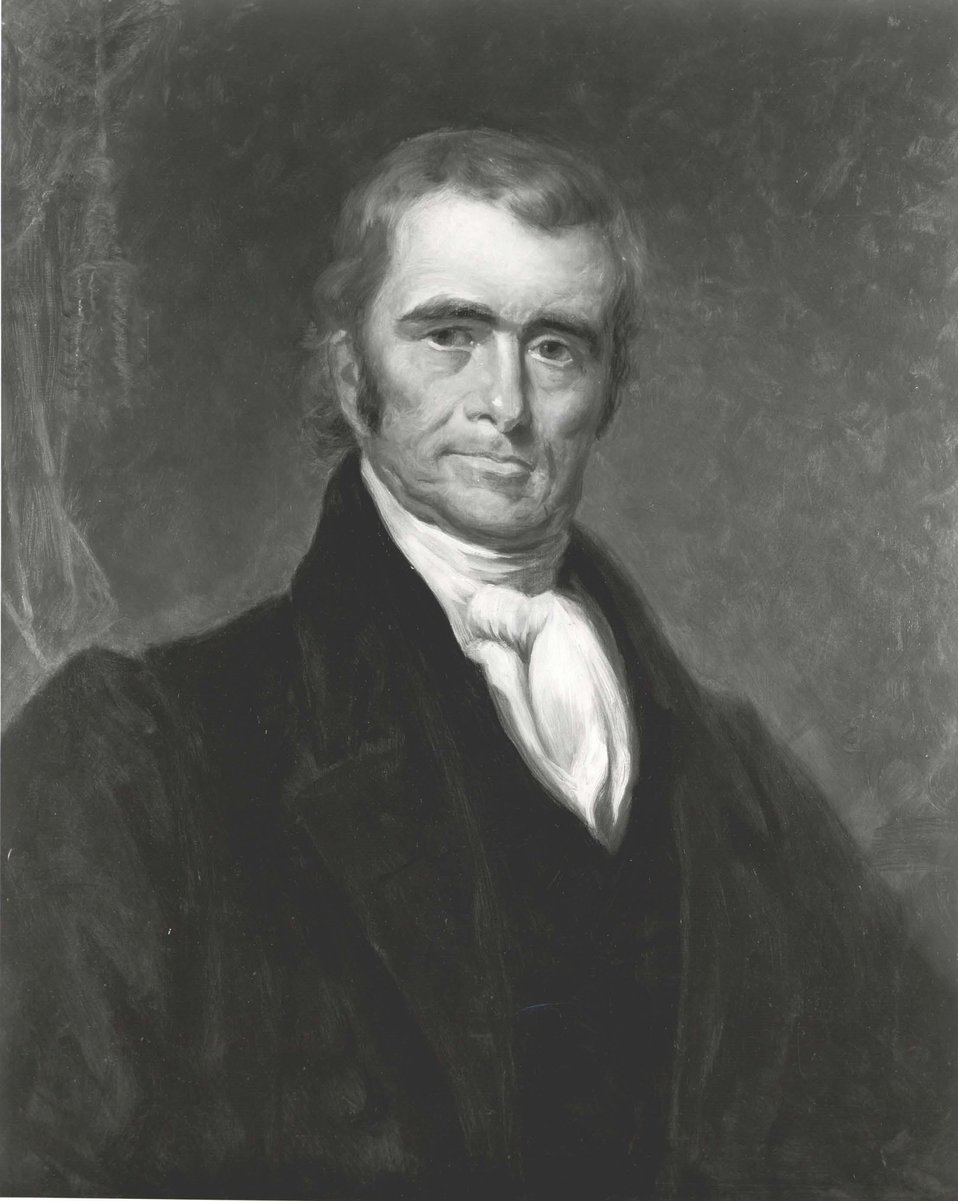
John Marshall, U.S. Secretary of State, June 6, 1800 to February 4, 1801 (ad interim February 4, 1801 to March 4 1801)